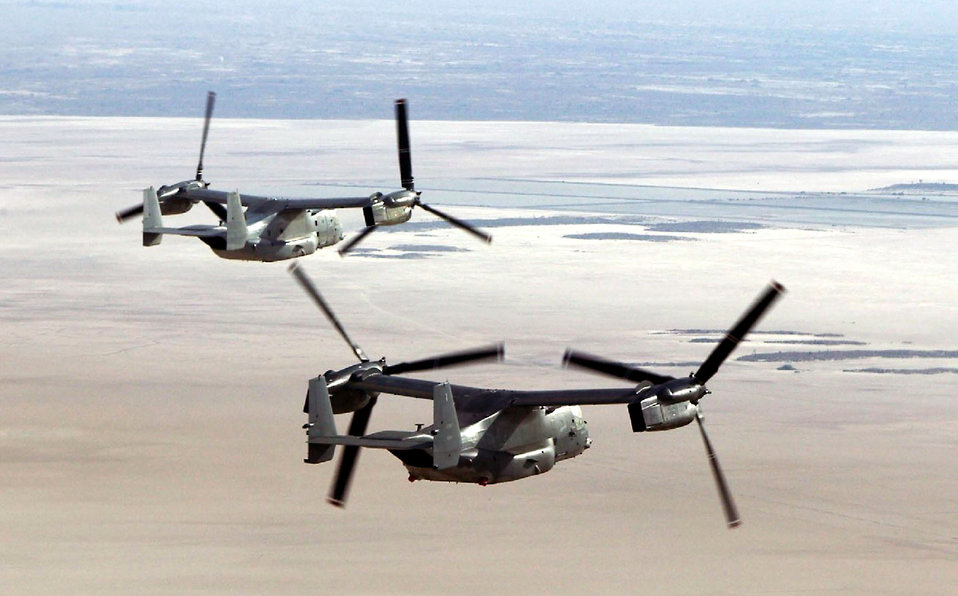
Osprey tandem

EDWARDS AIR FORCE BASE, Calif. -- A pair of CV-22s fly the first multi-ship interoperability sortie here recently. Interoperability testing is designed to ensure one aircraft's multi-mode radar will not interfere with the other while conducting operations.